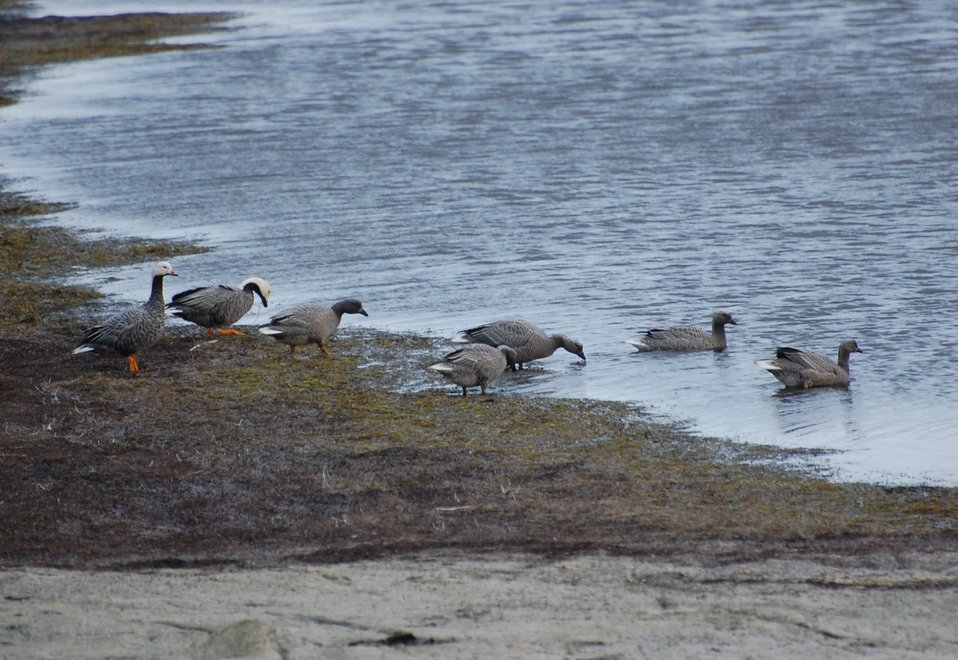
Emperor Geese

Izembek National Wildlife Refuge